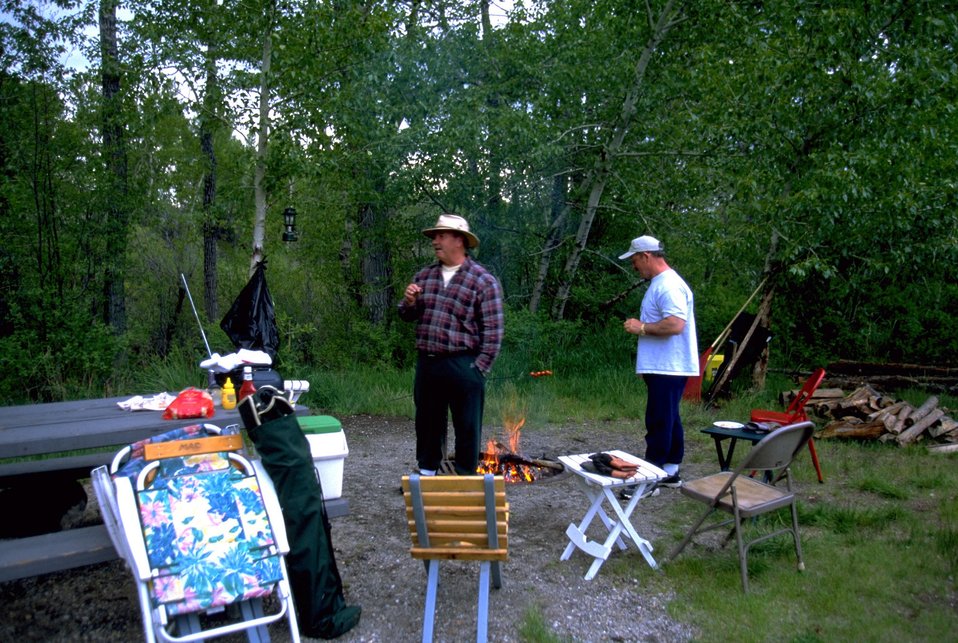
Campers at a fire pit at the Divide Campground